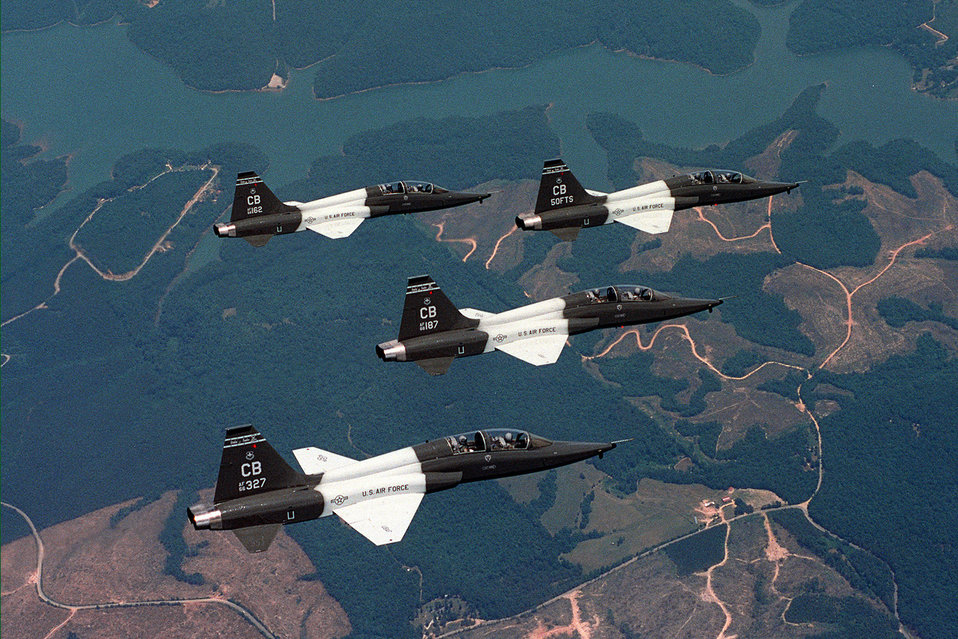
Quad Talons

FILE PHOTO -- Four T-38 Talons in formation. Talons are twin-engine, high-altitude, supersonic jet trainers used by the 50th Fighter Training Squadron, Columbus Air Force Base, Miss., in a variety of roles because of its design, economy of operations, ease of maintenance, high performance and exceptional safety record. Primarily Air Education and Training Command uses it for undergraduate pilot and pilot instructor training. Student pilots fly the T-38A to learn supersonic techniques, aerobatics, formation, night and instrument flying and cross-country navigation. More than 60,000 pilots have earned their wings in the T-38A.